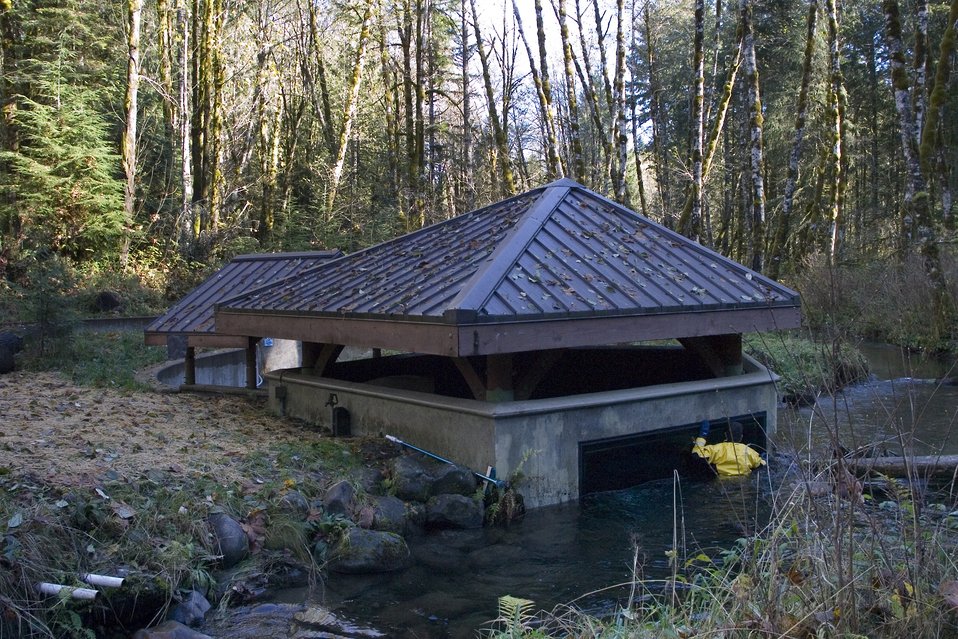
Kevin Davis, Wildwood Maintenance Worker, cleans the outside window of the salmon Viewing structure at BLM's Wildwood Recreation Area.